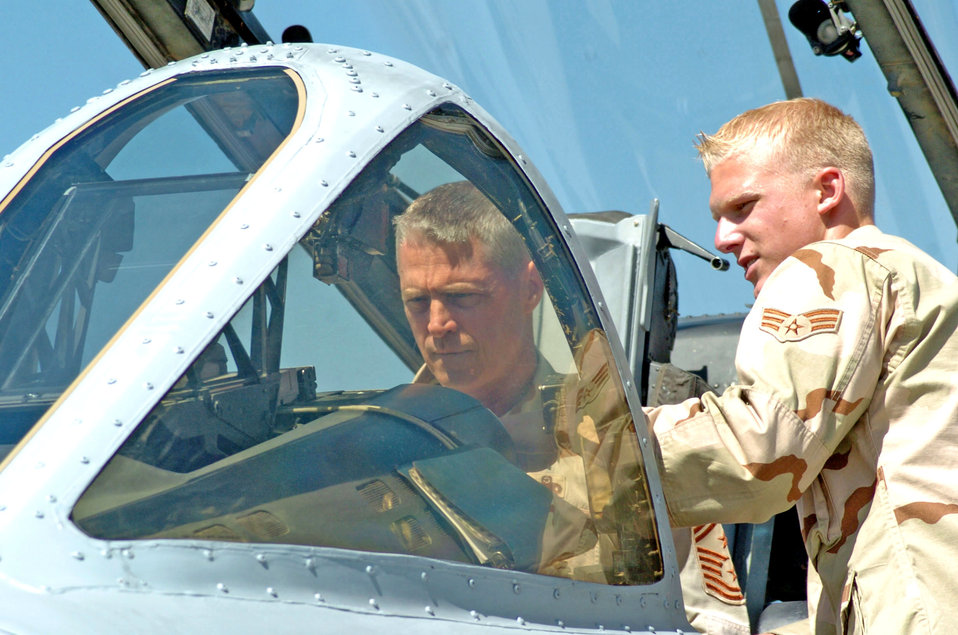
CENTCOM's command chief postures Airmen for long haul

Chief Master Sgt. Curt Brownhill gets an A-10 Thunderbolt II tour from Senior Airman Justin Dillon during a visit to Bagram Air Base, Afghanistan. Chief Brownhill is the command chief of U.S. Central Command. Airman Dillon is assigned to the 355th Expeditionary Aircraft Maintenance Squadron.